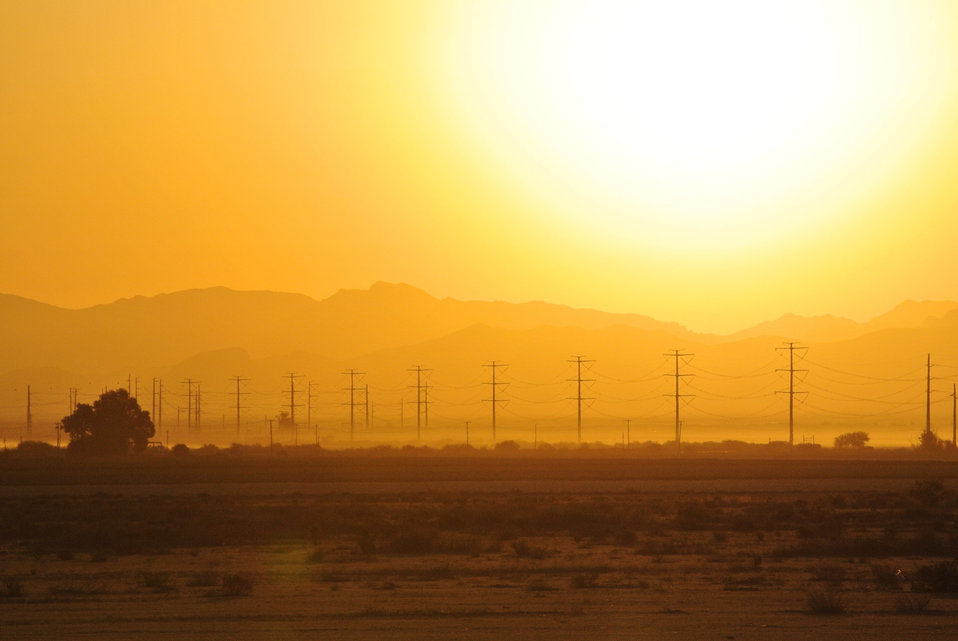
Sunrise 6-23-12 f

Sunrise 6-23-12.